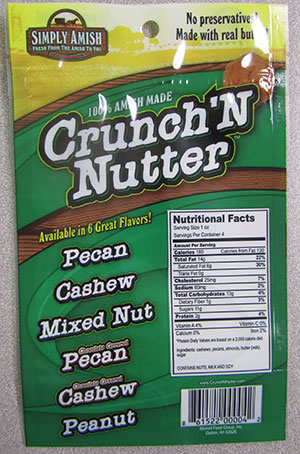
RECALLED – Crunch'N Nutter Mixed Nut

January 17, 2014 – Product Recall – Merrell Food Group Issues Allergy Alert on Undeclared Peanut in “Crunch’N Nutter - Mixed Nut.